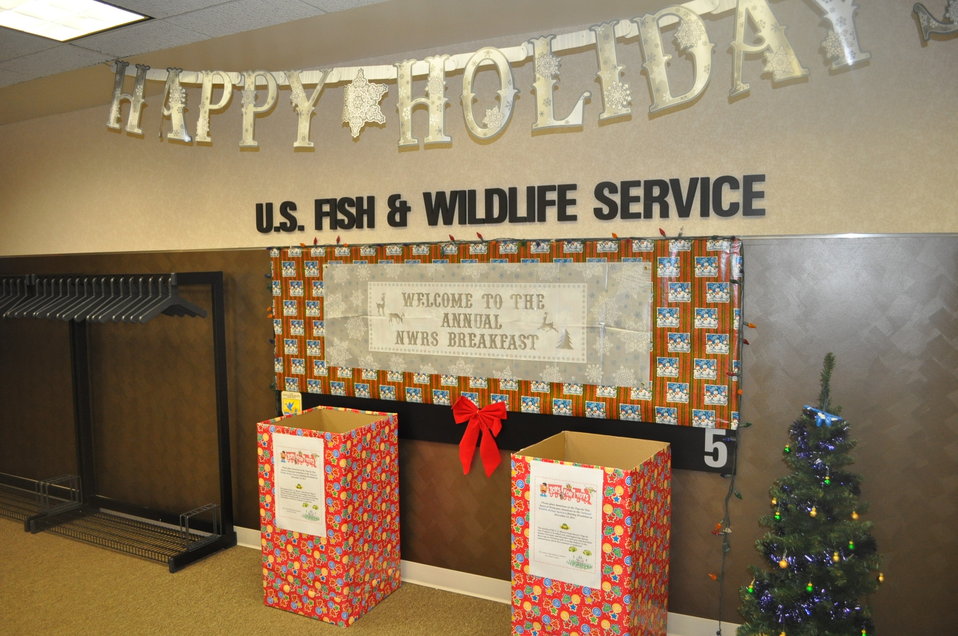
toy boxes before the breakfast guests arrive